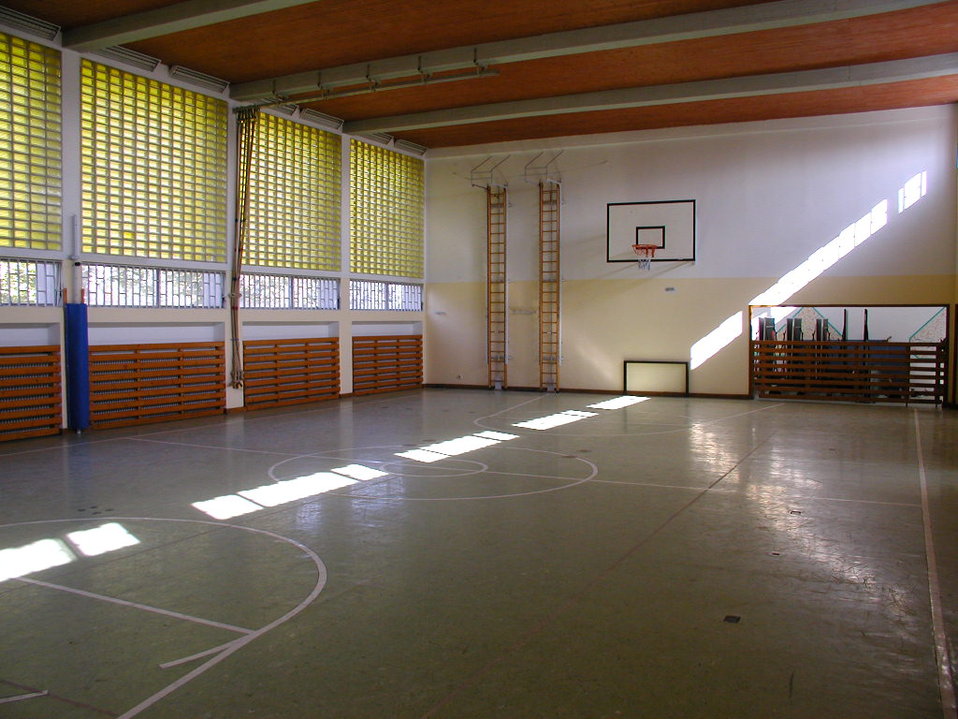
Deutsch: Turnsaal JA Gerasdorf